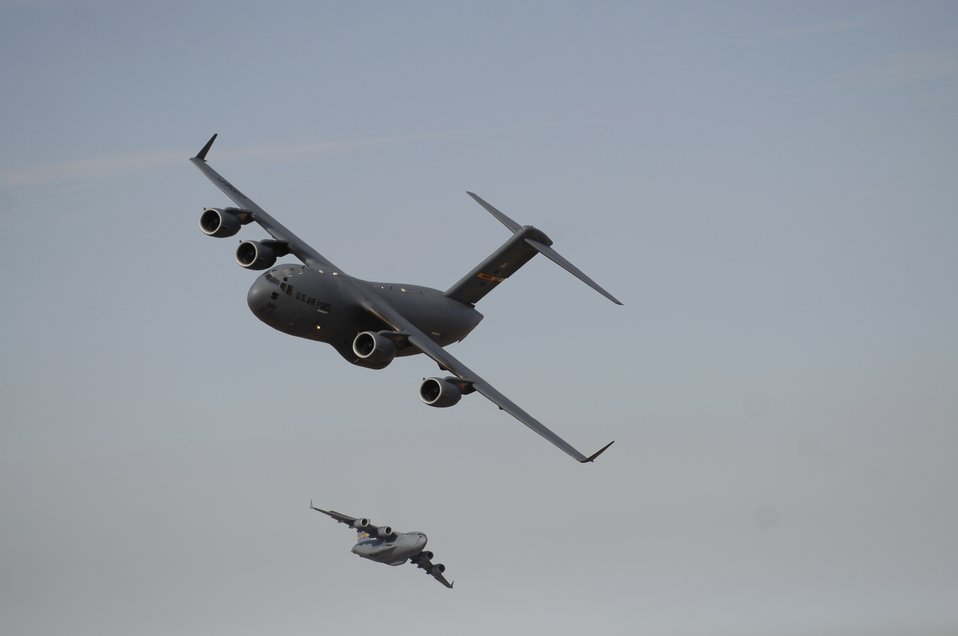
Friendship jump over Egypt

After dropping multi-national paratroopers during an Exercise Bright Star mission, C-17 Globemaster IIIs fly a pattern out of the drop zone Oct. 15, 2009. The aircraft are from the 437th Airlift Wing at Charleston Air Force Base, S.C.